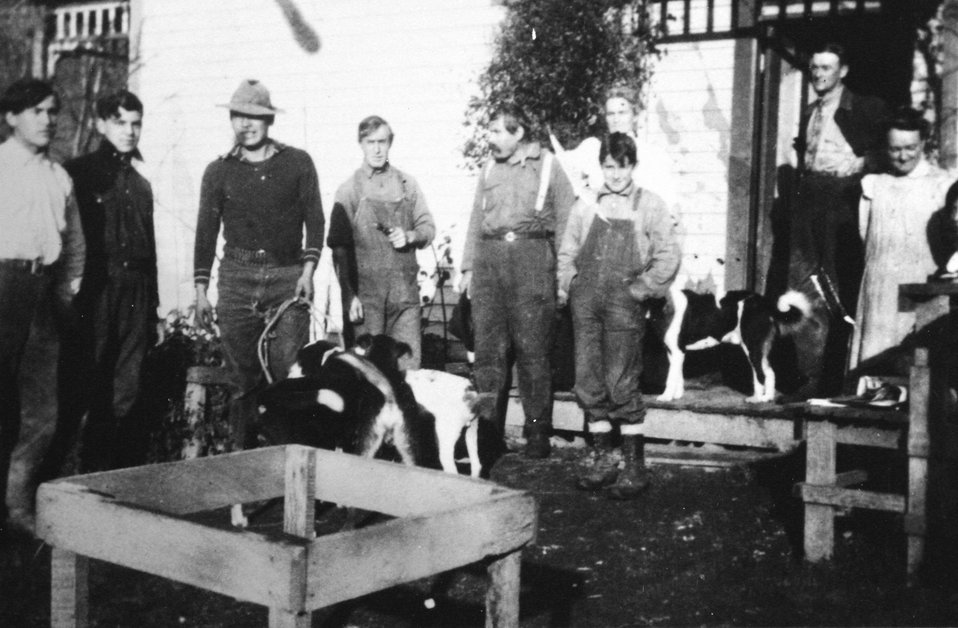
Group at George Billings' Ranch.